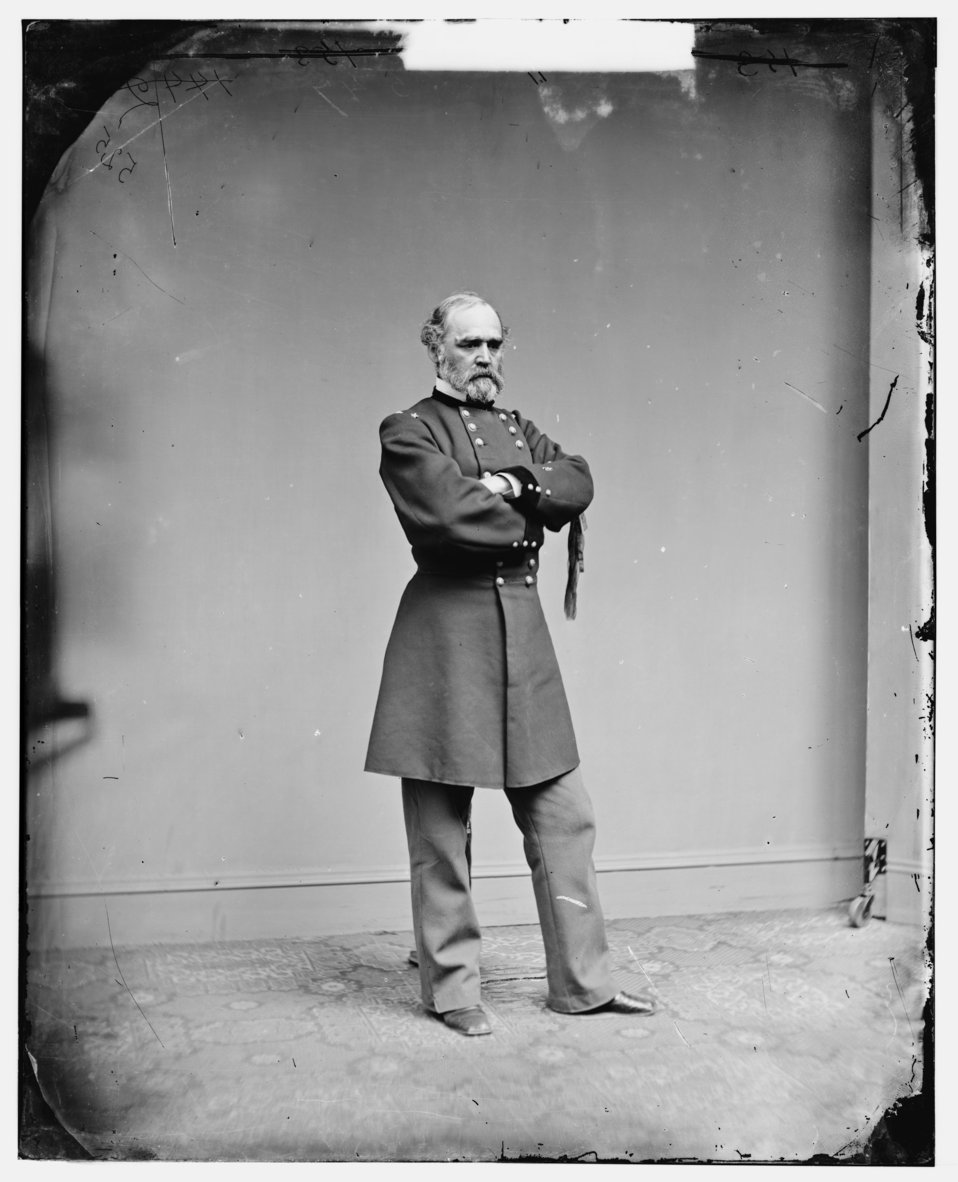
Montgomery Meigs

Gen. Montgomery Meigs, engineer in charge of the building the Capitol Dome and extensions.